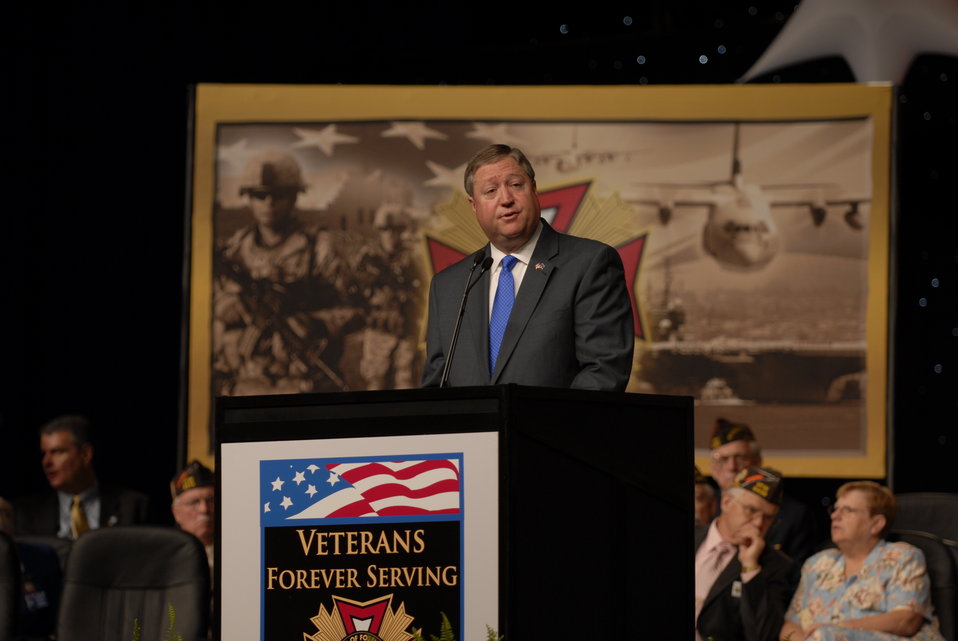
Acting secretary addresses VFW

Acting Secretary of the Air Force Michael Donley speaks at the Veterans of Foreign Wars National Convention in Orlando on Aug. 18.